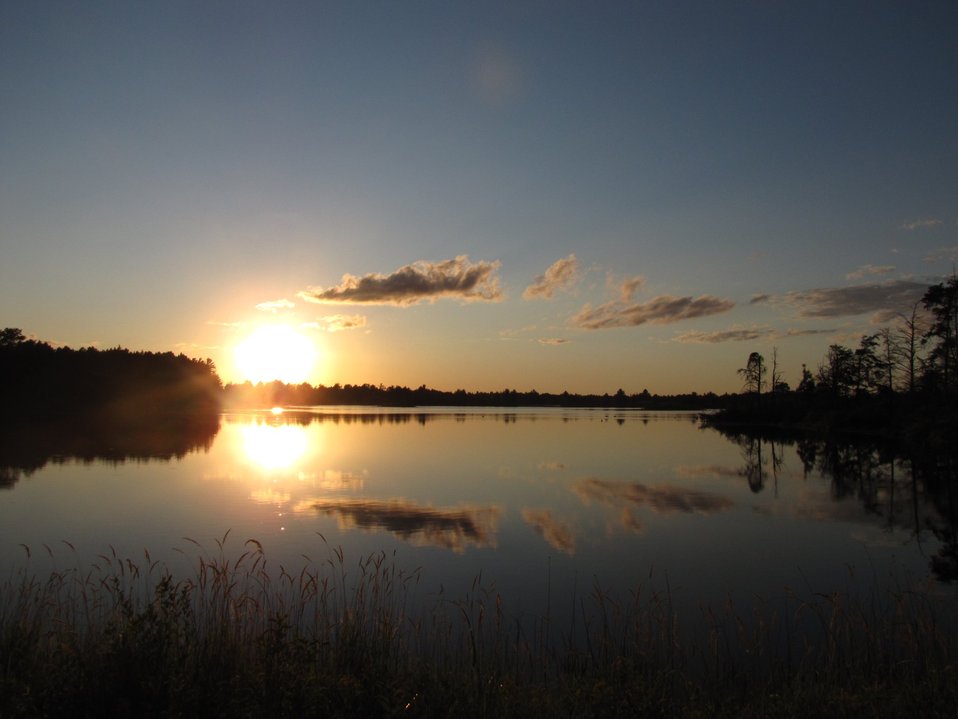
August sunset

Seney National Wildlife Refuge, MI